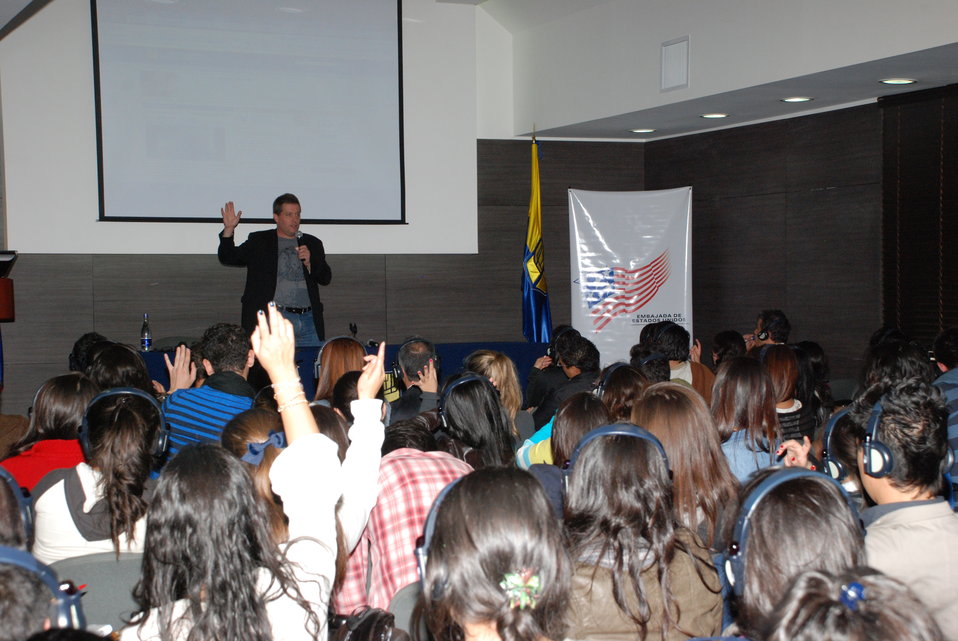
Peter Shankman Participates in Social Media Week in Bogota, Colombia

Peter Shankman, Founder of Help a Reporter Out, discusses his experience incorporating social media into marketing campaigns during Social Media Week (@SMW), hosted by the U.S. Embassy in Bogota, Colombia, at Javeriana University in Bogota, Colombia, on September 20, 2011.